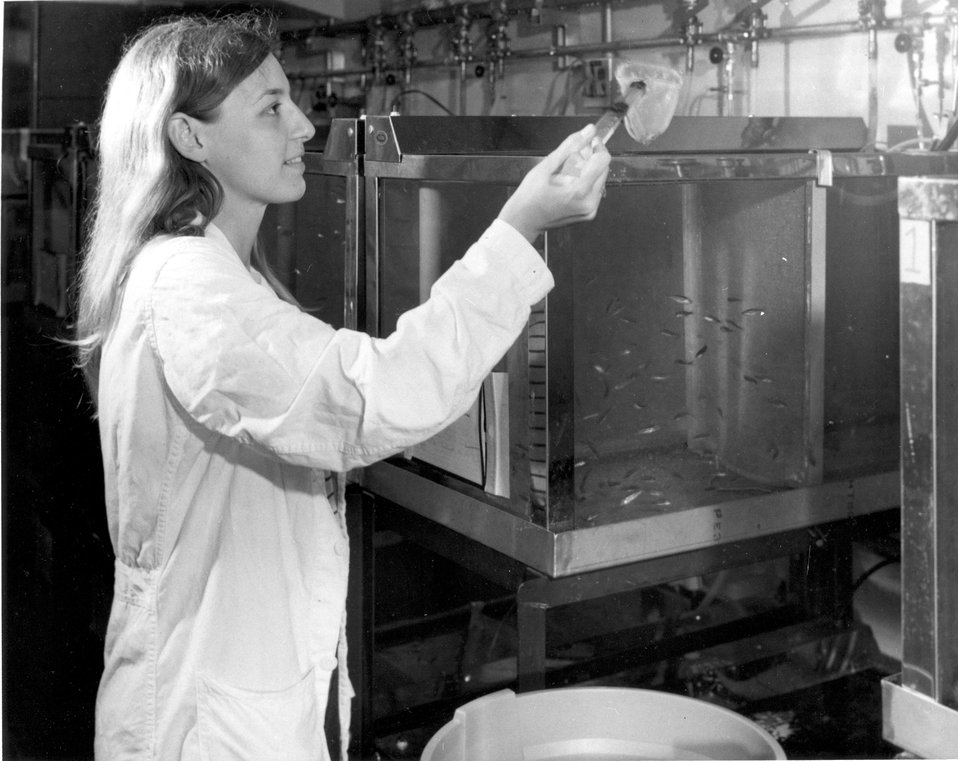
Undergraduate students participate in research programs at the Atomic Energy Commission's Oak Ridge National Laboratory (Tenn.) and may obtain academic credit from their universities with the submission of a research report on their project. c. 1972